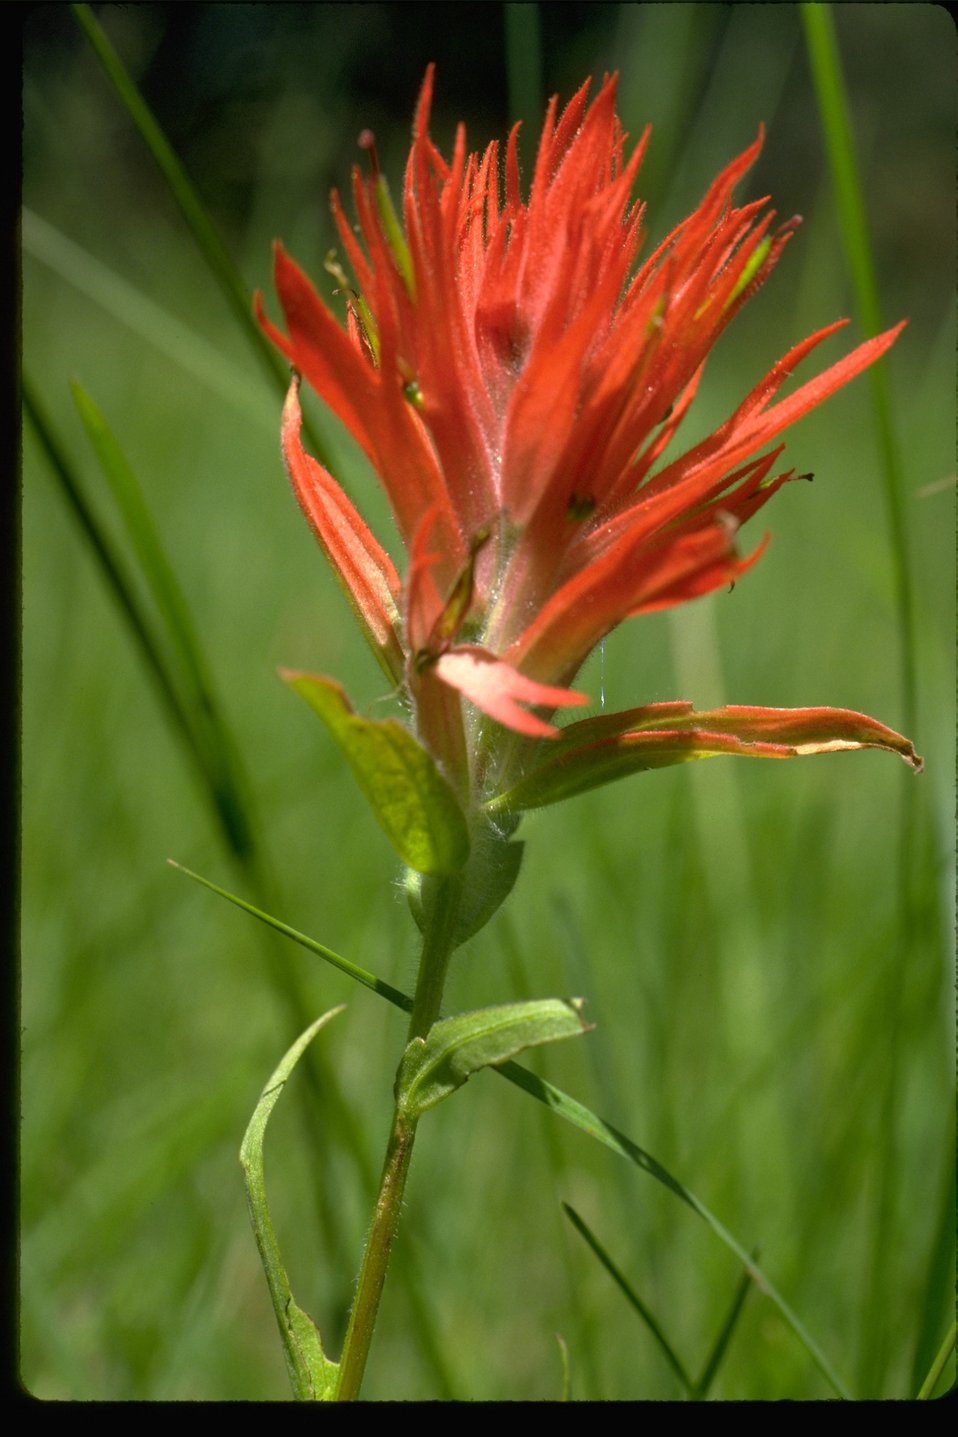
Castelleja Minata